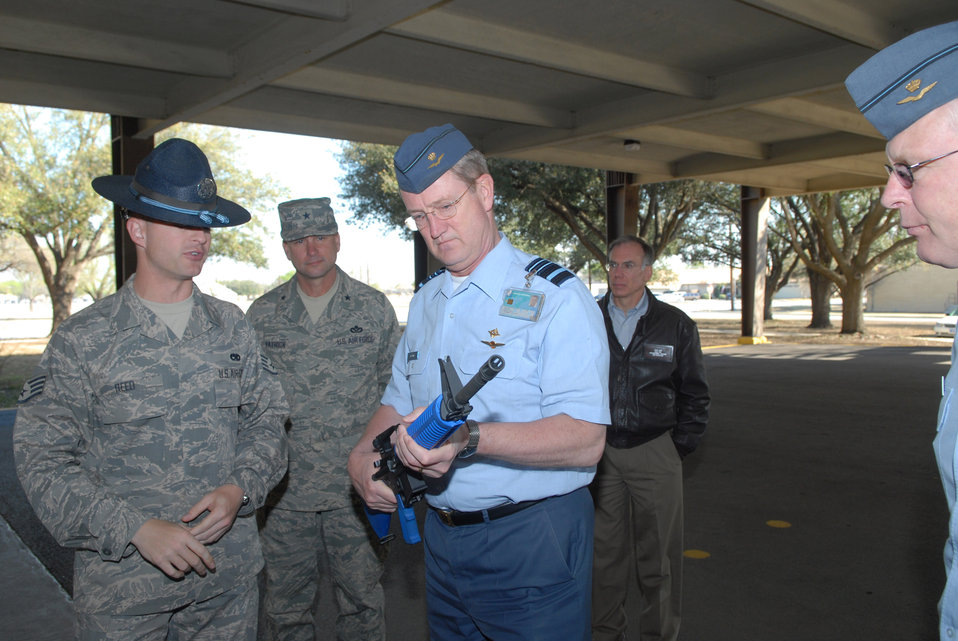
Dutch air chief predicts continued cooperation

Staff Sgt. Daniel Reed shows Lt. Gen. Hans de Jong the blue M-16 rifles trainees carry throughout their basic training during the general's tour March 11 of Lackland Air Force Base, Texas. General Jong is the Royal Netherlands air force commander. Sergeant Reed is a military training instructor from the 324th Training Squadron at Lackland AFB.